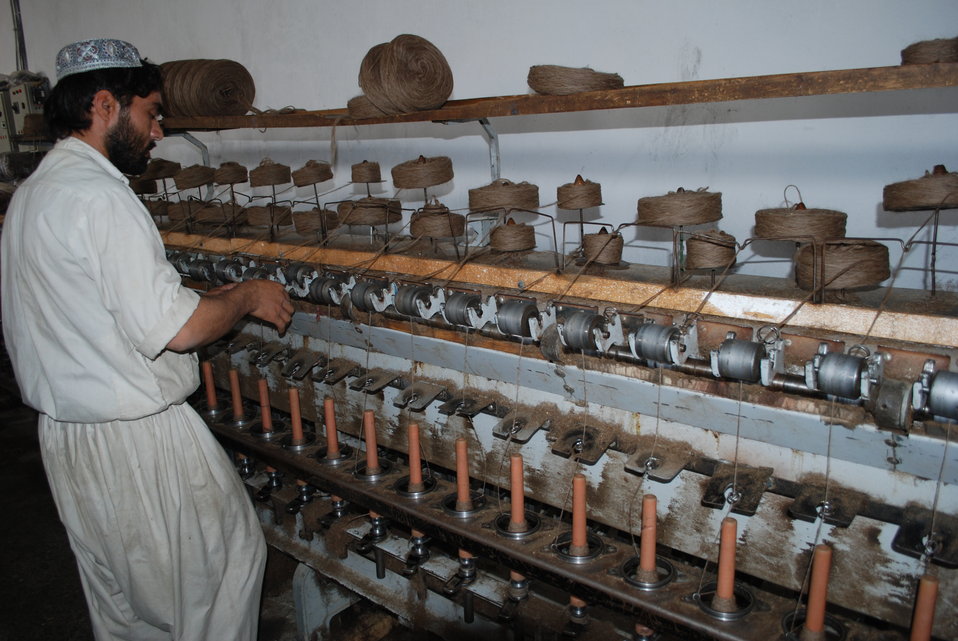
'On the Road' in Balkh Province